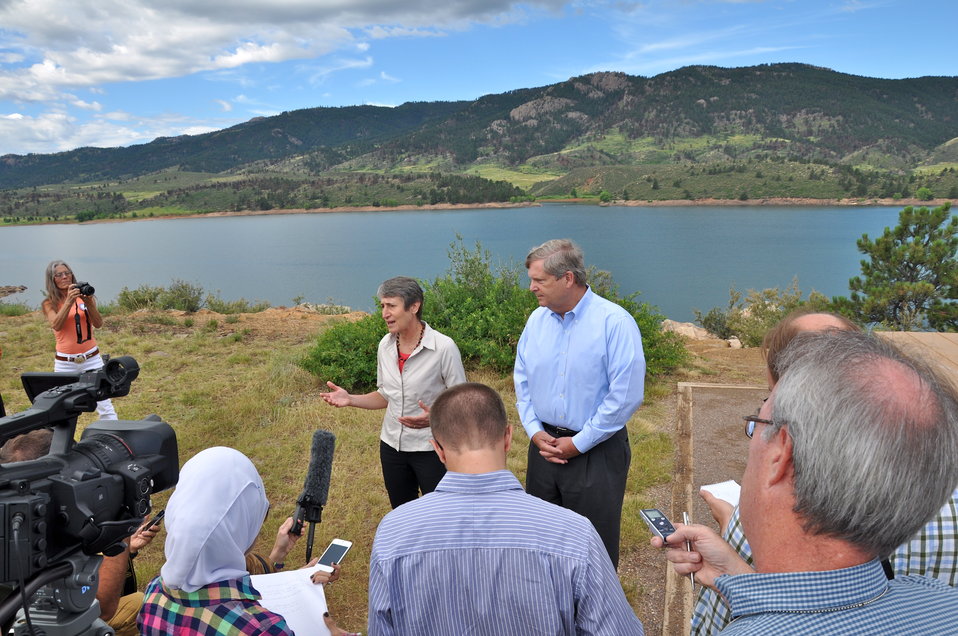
Agriculture Secretary Tom Vilsack and Interior Secretary Sally Jewell answer questions from the press at the Memorandum of Understanding (MOU) signing held at the Horsetooth Reservoir in Fort Collins, CO on Jul. 19, 2013. This MOU will facilitate activities such as wildfire risk reduction through forest thinning, prescribed fire and other forest health treatments; minimizing post-wildfire erosion and sedimentation; and restoring areas that are currently recovering from past wildfires through tree planting and other habitat improvements.